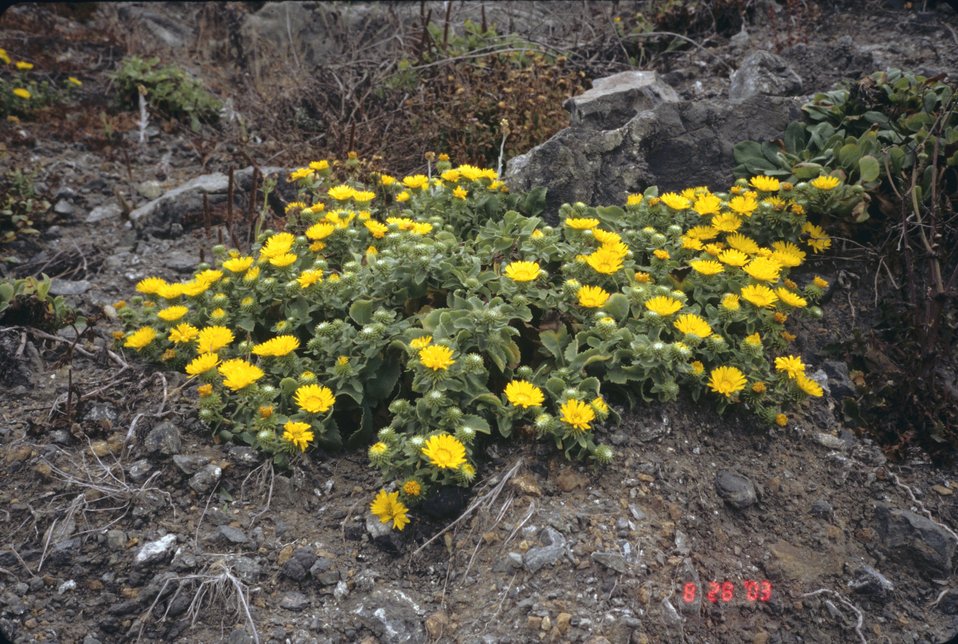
Pinnacle Gulch Beach